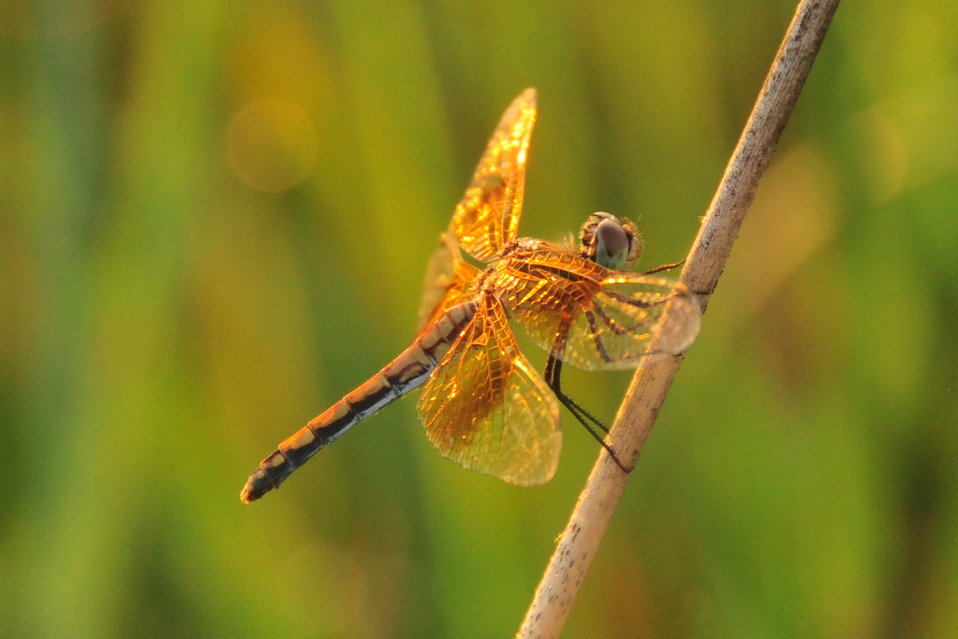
Dragonfly resting on bulrush